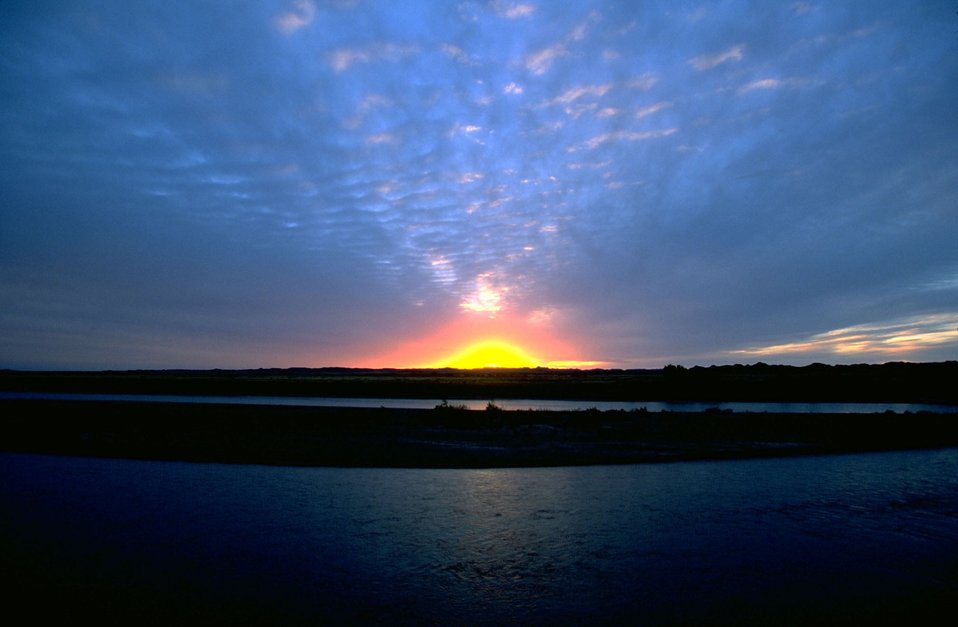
Sunset along the Yellowstone River